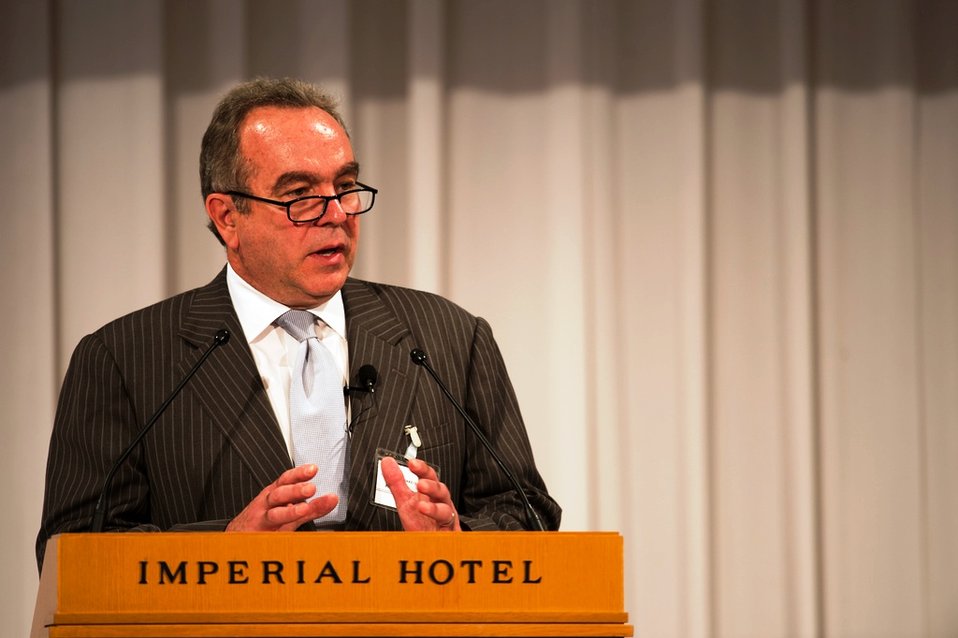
Assistant Secretary Campbell Delivers Remarks on the U.S.-Japan Alliance

Assistant Secretary of State for East Asian and Pacific Affairs Kurt M. Campbell delivers remarks on the strength of the U.S.-Japan alliance and the future of the U.S. Asia-Pacific policy at the Nikkei-CSIS Forum in Tokyo, Japan, October 26, 2012.